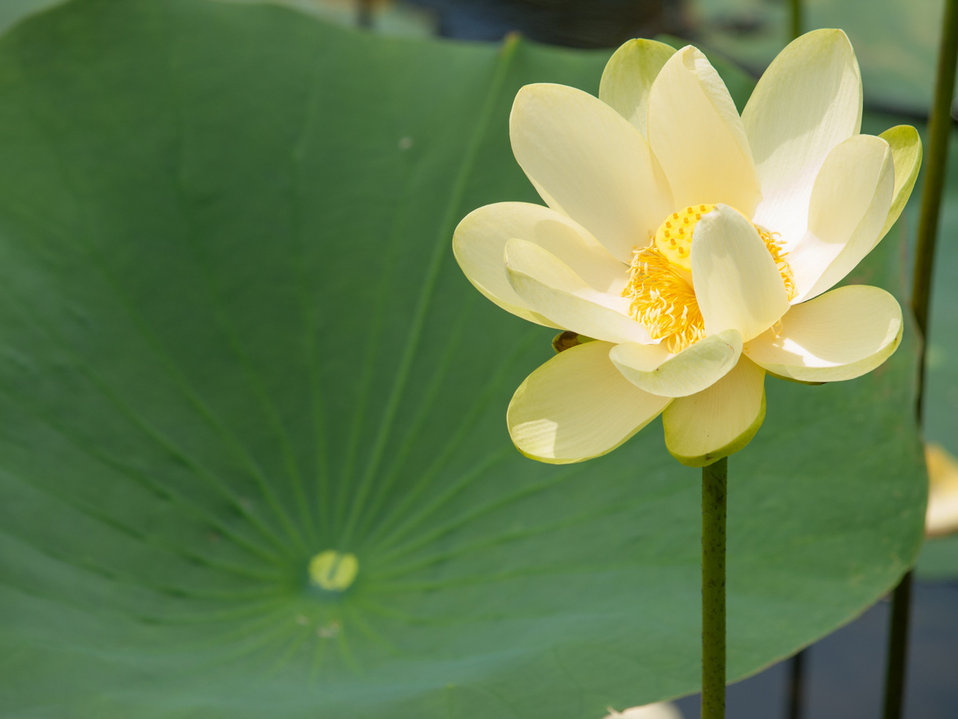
Lotus flower

Photographed at Back Bay National Wildlife Refuge.